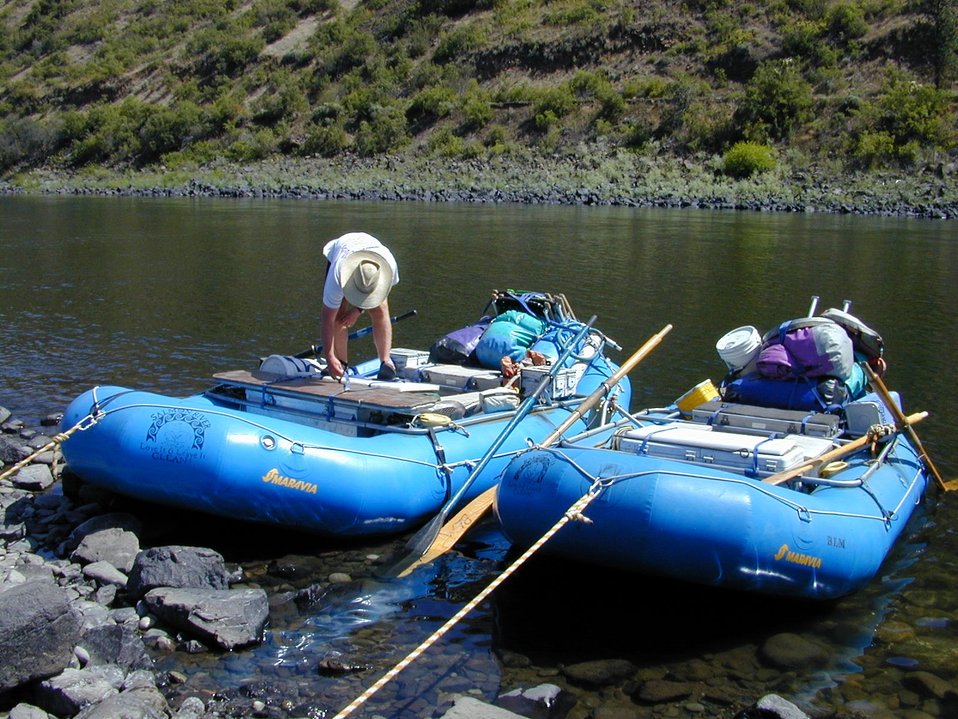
Recreation Rafting on Lower Salmon River Cottonwood Field Office UCSC Upper Columbia Salmon Clearwater District